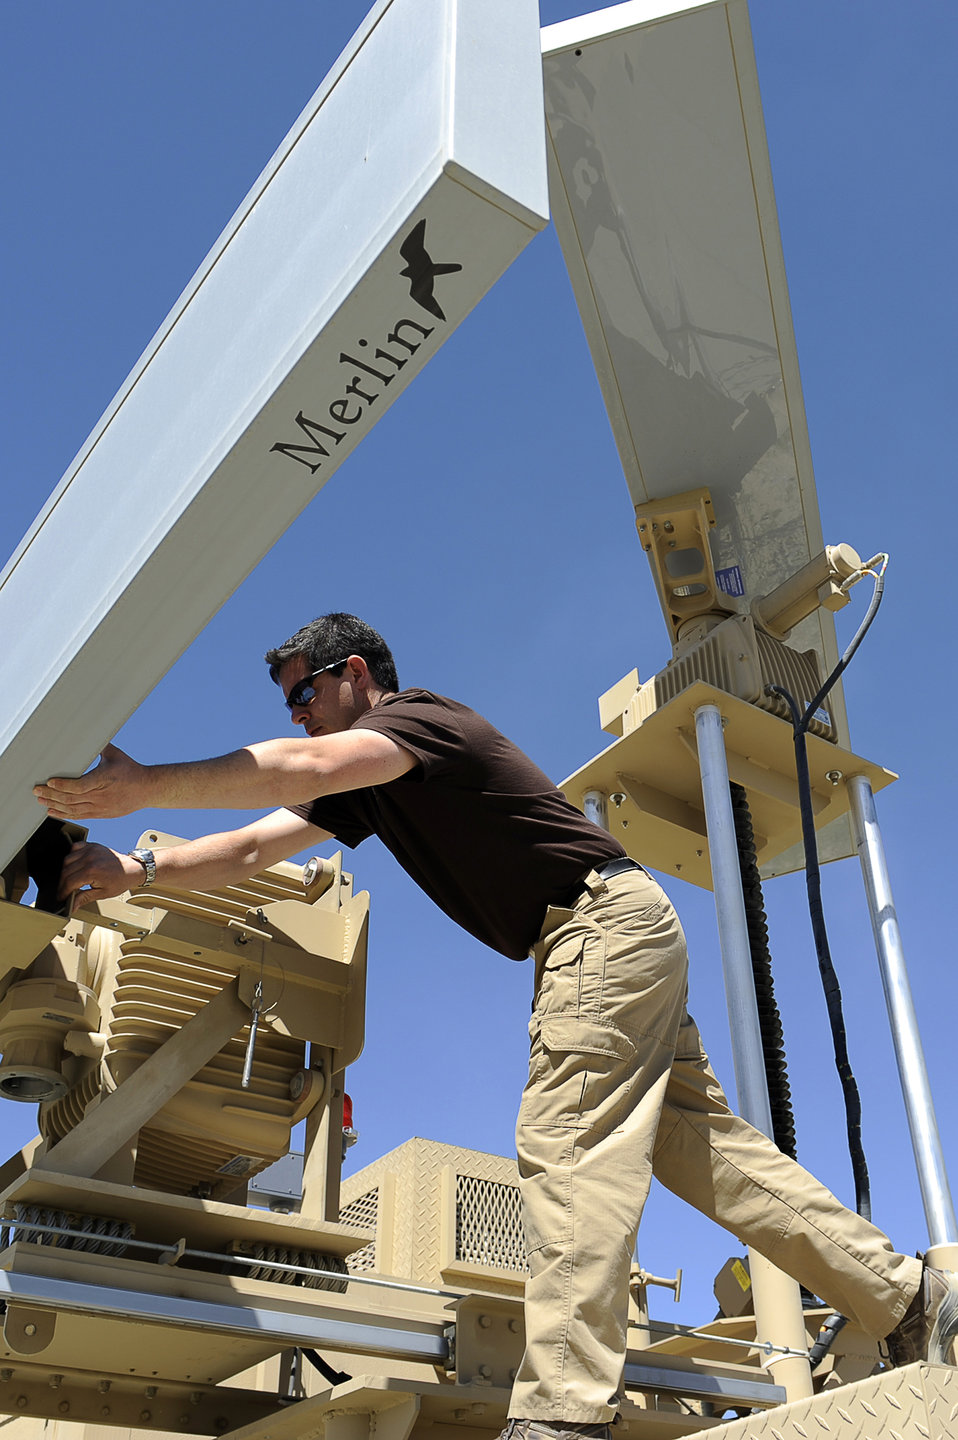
Monitoring the airfield under the watchful eye of Merlin

Mike Bierman installs a Merlin bird radar system May 29, 2010, at Bagram Airfield, Afghanistan. Mr. Bierman is a contractor with DeTech Incorporated.